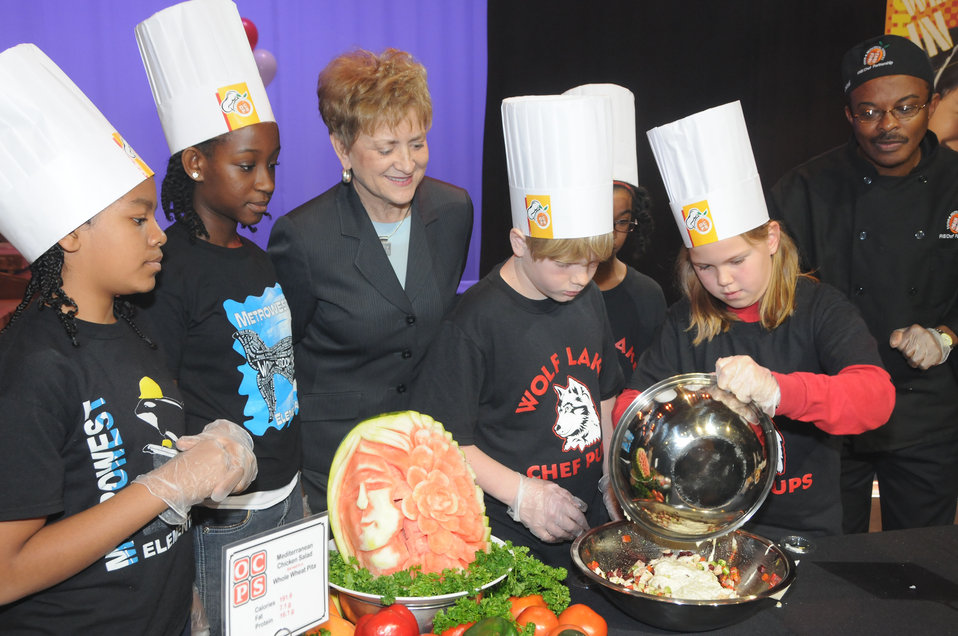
FL CMTS Event - Jan 28, 2011 DUS, kid chefs

Dr. Janey Thornton, USDA Deputy Under Secretary for the Food, Nutrition and Consumer Services (center) watches as Metrowest Elementary School and Wolf Lake Elementary School student chefs cook their recipes during the Chefs Move to Schools event, Orlando, Fla.